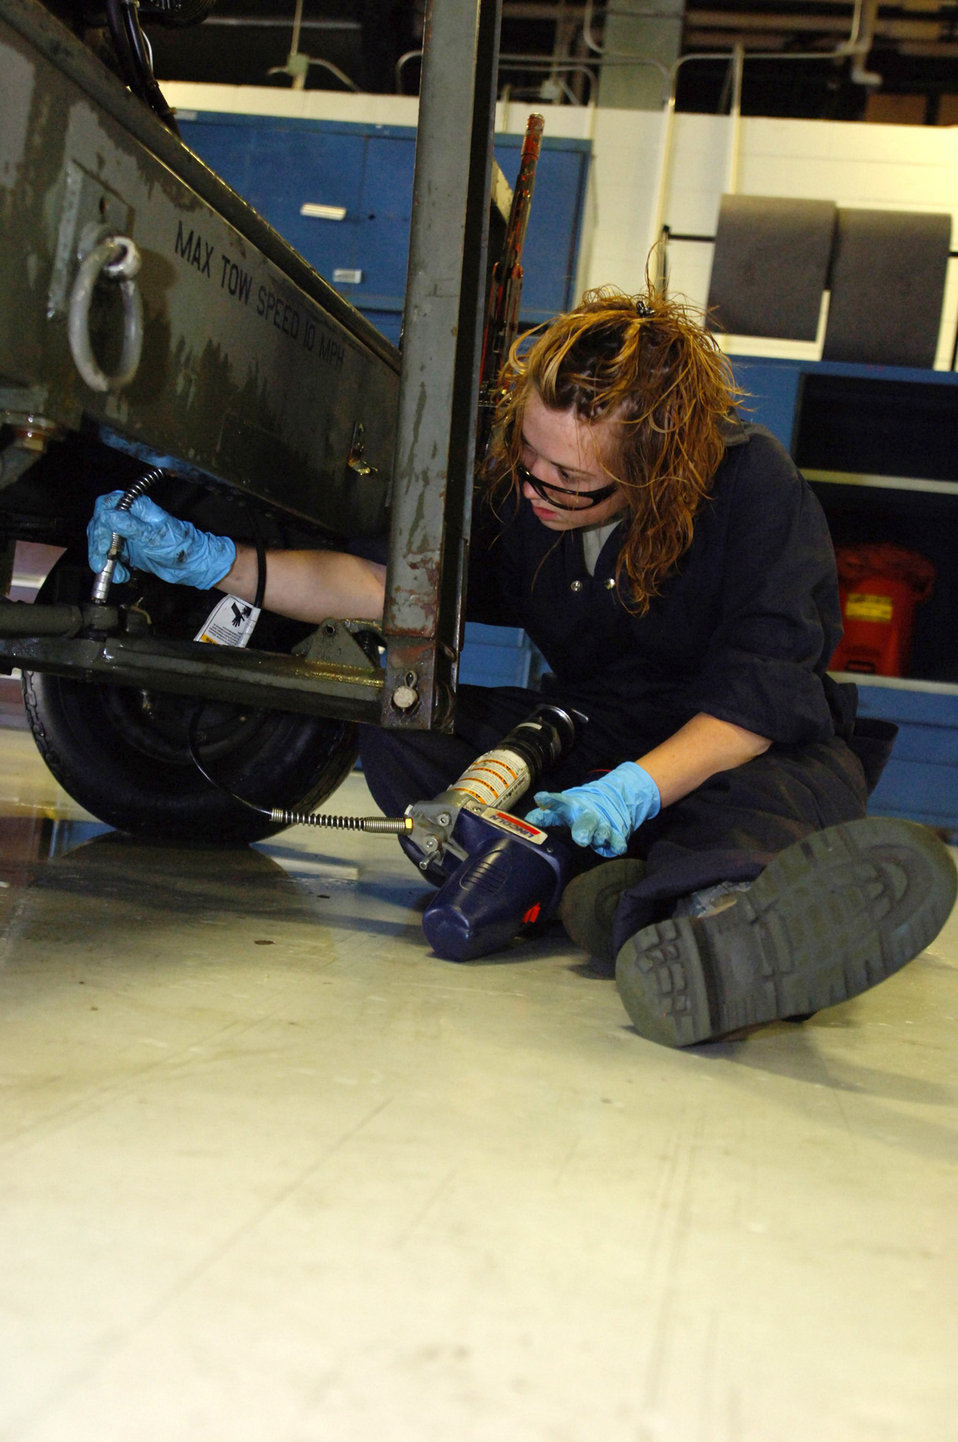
Minot Airmen use AFSO 21 to save $1 million annually

Airman 1st Class Jodi Ebnit prepares to fill the oil on a dash 95 large air start system July 27 at Minot Air Force Base, N.D. The 5th Maintenance Squadron Aerospace Ground Equipment Flight recently initiated an Air Force Smart Operations for the 21st century process to increase the unit's efficiency to meet the base's mission. Airman Ebnit is an AGE technician.